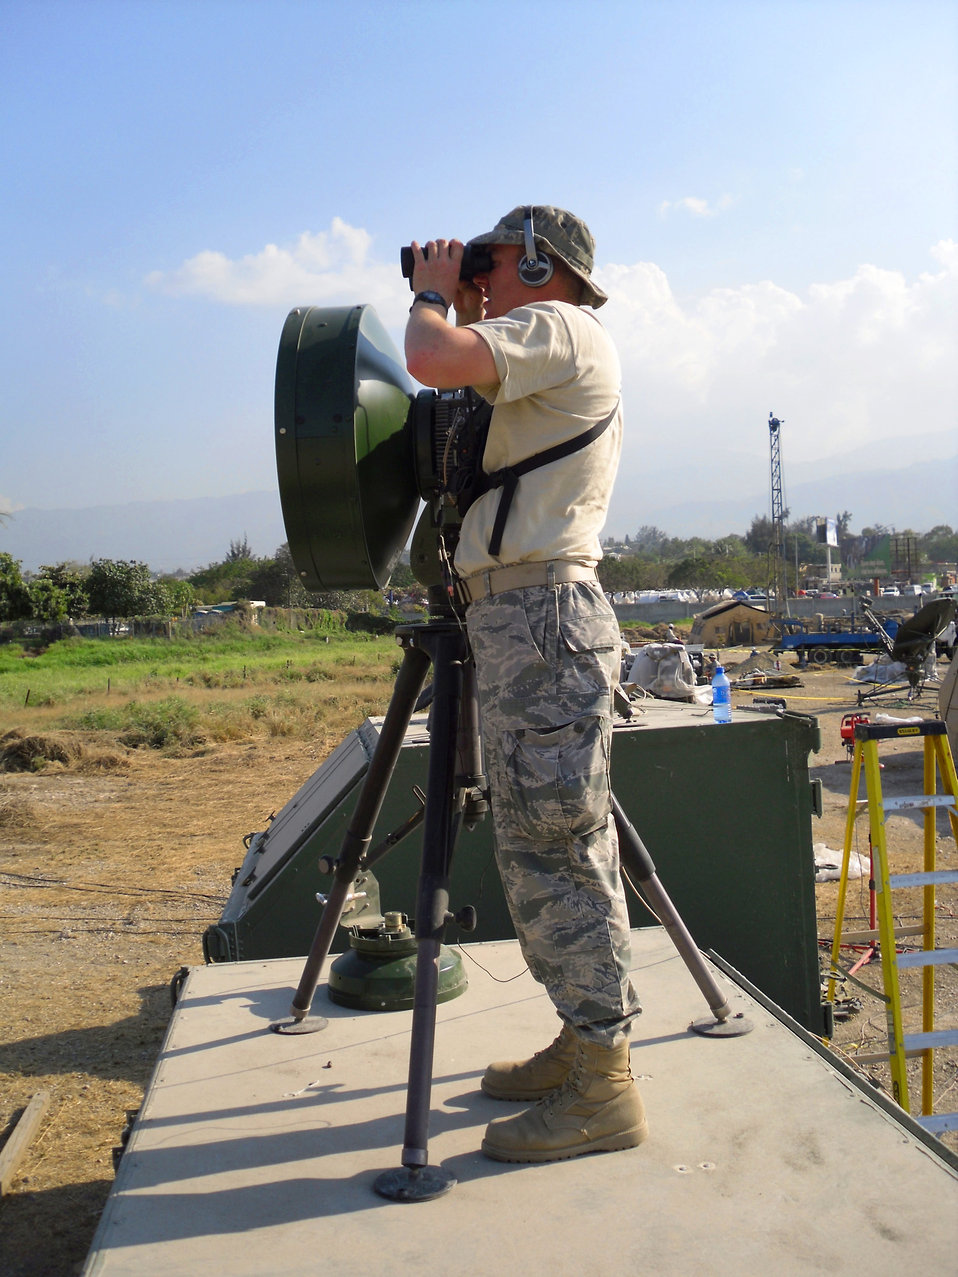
Is that Florida?

First Lt. Jake Cadwell sets up a wireless link to the other side of the Toussaint L'Ouverture International Airport June 9, 2010, in Port-au-Prince,Haiti. He is with the 32nd Combat Communications Squadron at Tinker Air Force Base, Okla. Members of group were supporting relief efforts in Haiti since February and the last remaining members returned home in June.